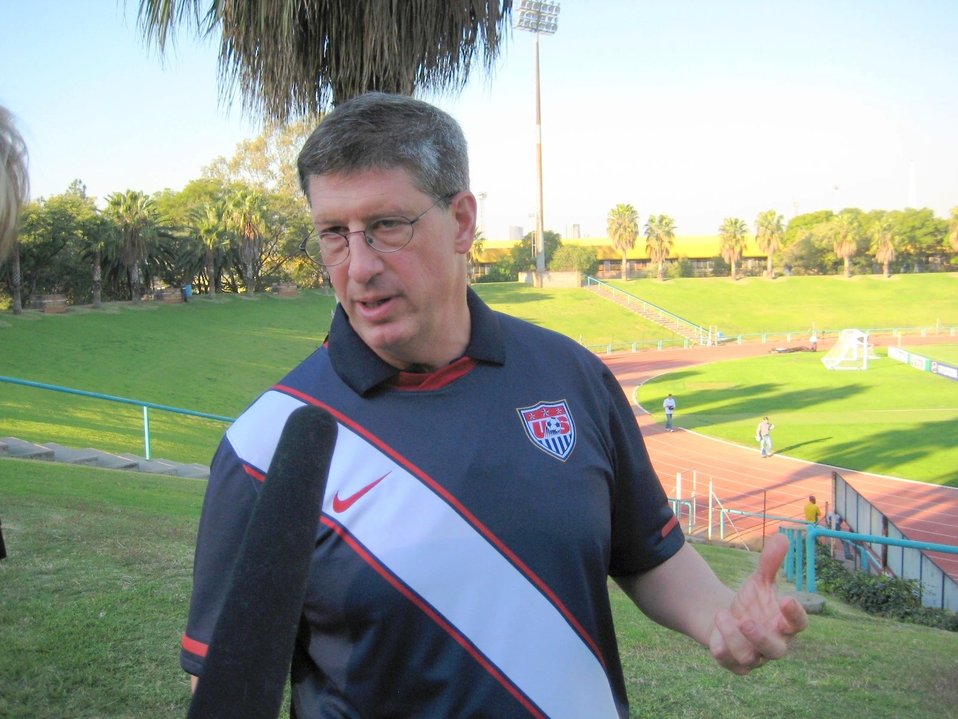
NPR Interviews Ambassador Gips

NPR interviews U.S. Ambassador to South Africa Donald Gips at the U.S. National Soccer Team's open practice session with South African students and U.S. Mission to South Africa families at the Pliditch Stadium in Pretoria, South Africa, on June 6, 2010. The U.S. National Soccer Team is preparing for the 2010 World Cup in South Africa.